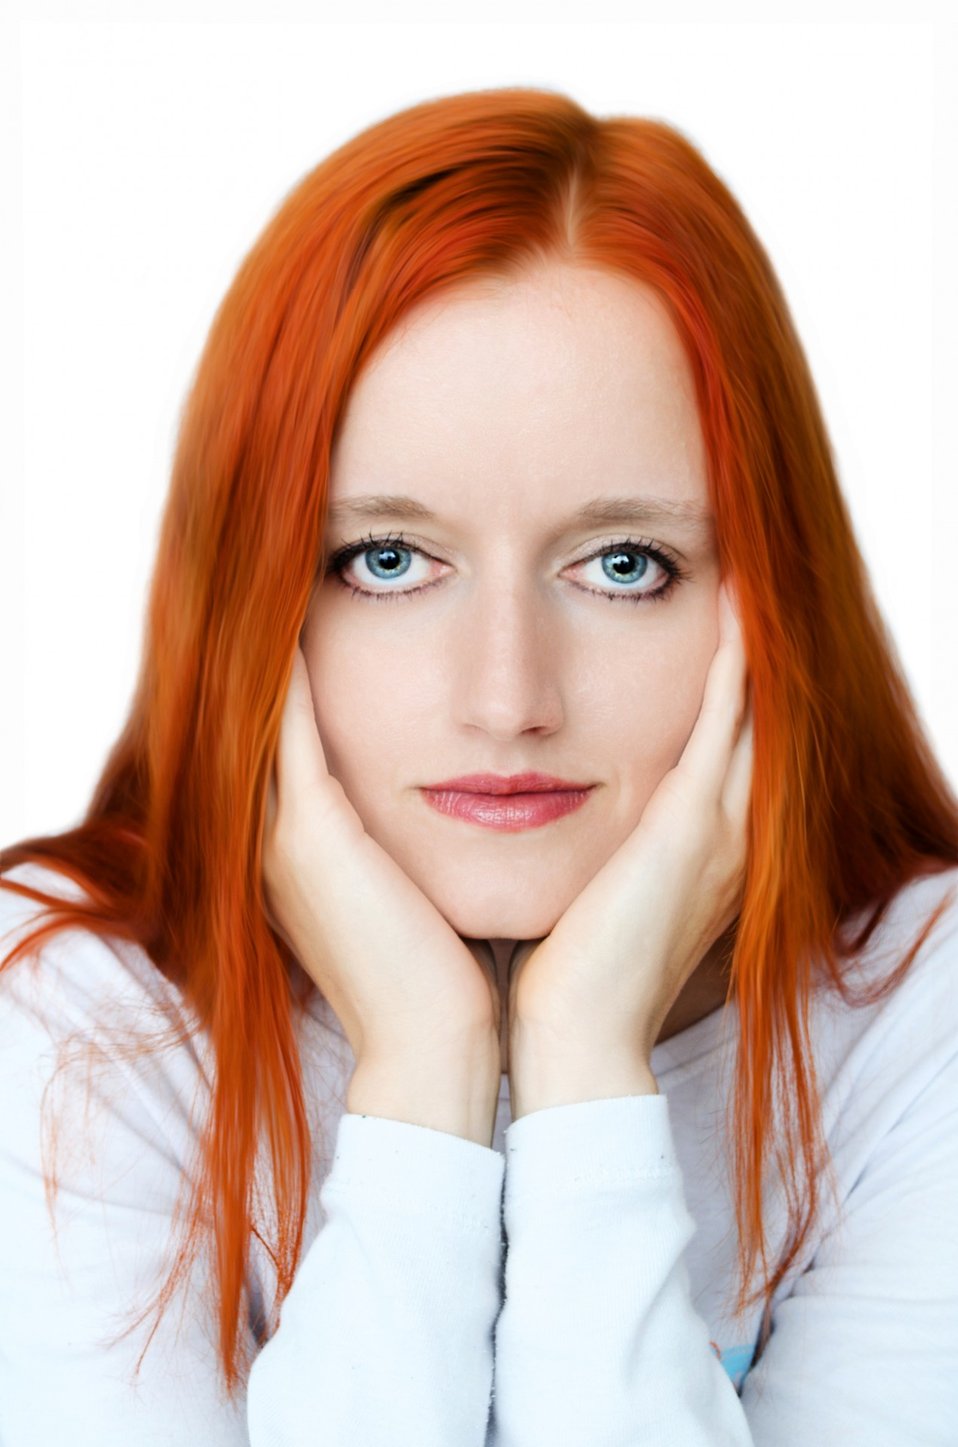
Woman with red hair.